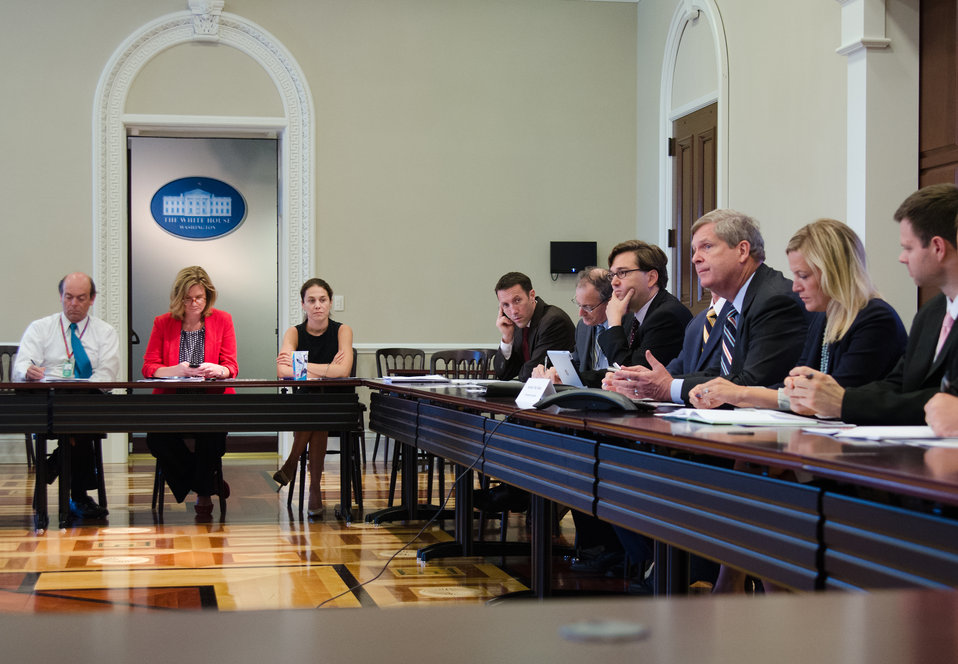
Agriculture Secretary Tom Vilsack chaired a meeting of the White House Rural Council at the Executive Office Building in Washington, D.C. on Friday, July 27, 2012 to update members and stakeholders on the Administration response to the drought and explore ways to assist American farmers and ranchers suffering in its affects.